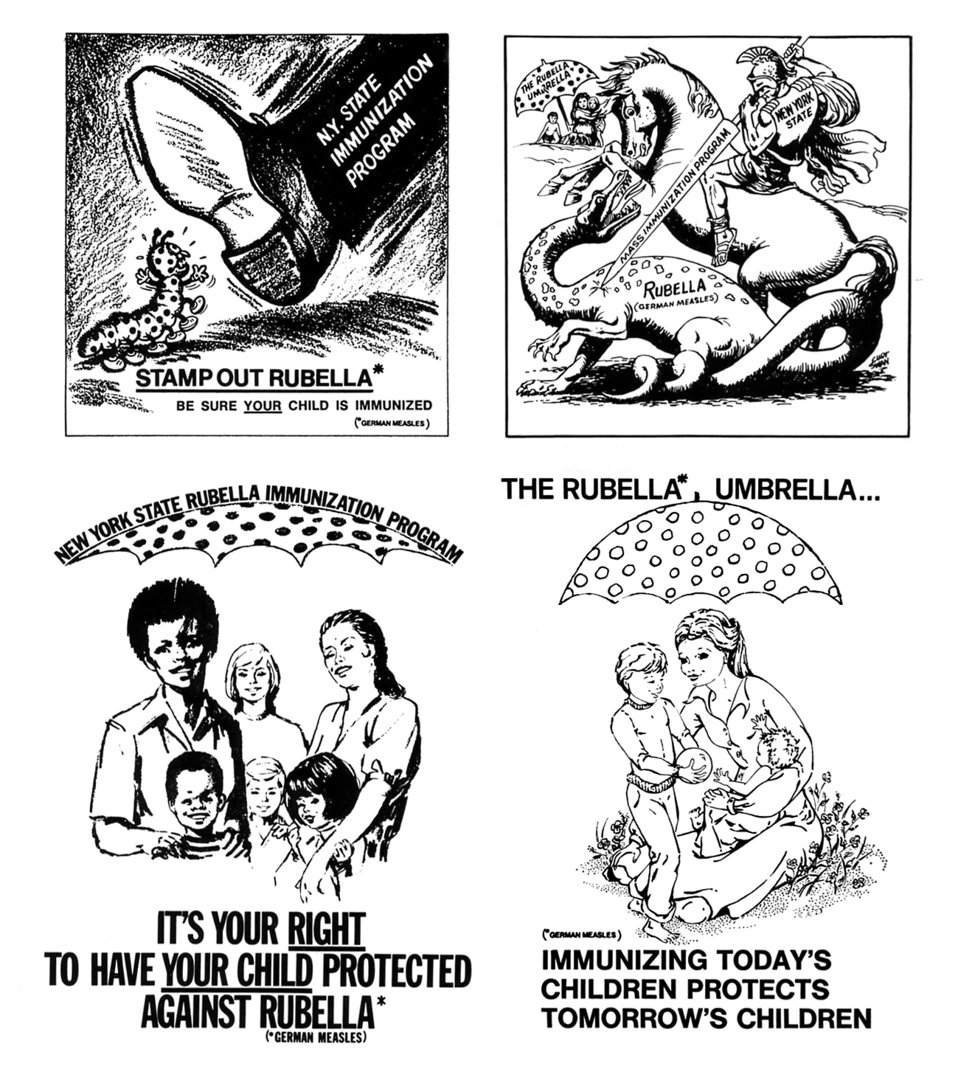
Shown here is a grouping of four illustrations that were used in public service campaigns to encourage parents to vaccinate their children against Rubella in the late 1960s and early 1970s.